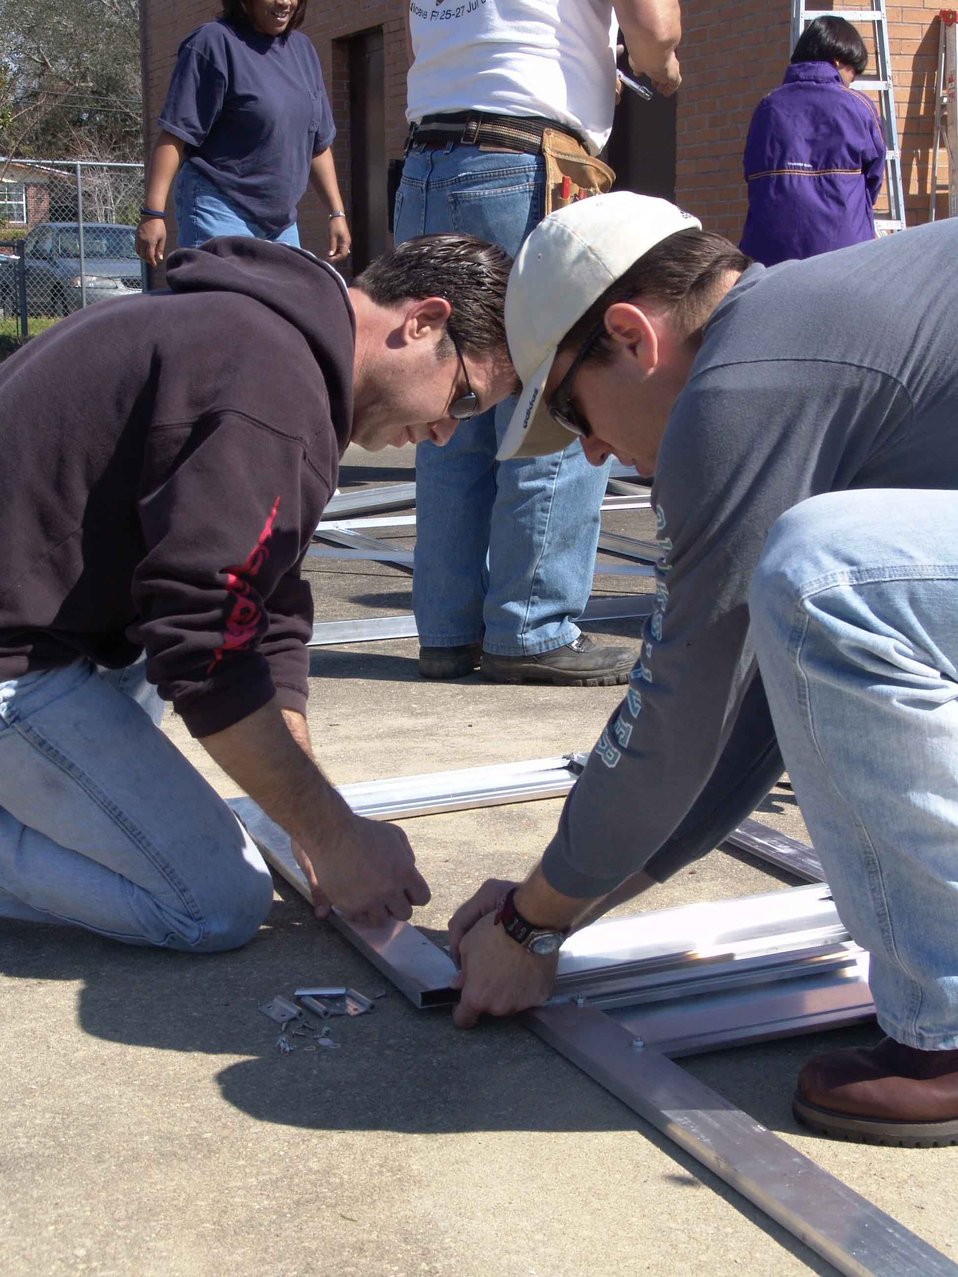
Airmen help local school rebuild greenhouse

VALPARAISO, Fla. -- Tech. Sgt. Robert Martorelli (left) and Bryan Gartner insert bolts and hinges into one of the window frames of a greenhouse being built at an elementary school here. Hurricane Ivan destroyed the school's greenhouse in September. More than 15 Airmen from nearby Elgin Air Force Base and Duke Field helped build a replacement.